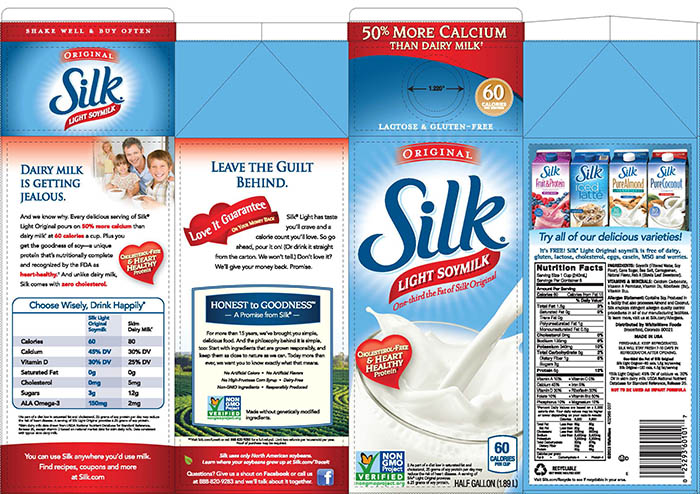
RECALLED – Silk Light Original Soymilk

May 19, 2014 – Product Recall – WhiteWave Foods Issues Allergy Alert on Undeclared Almondmilk in Half Gallon Silk Light Original Soymilk Containers.